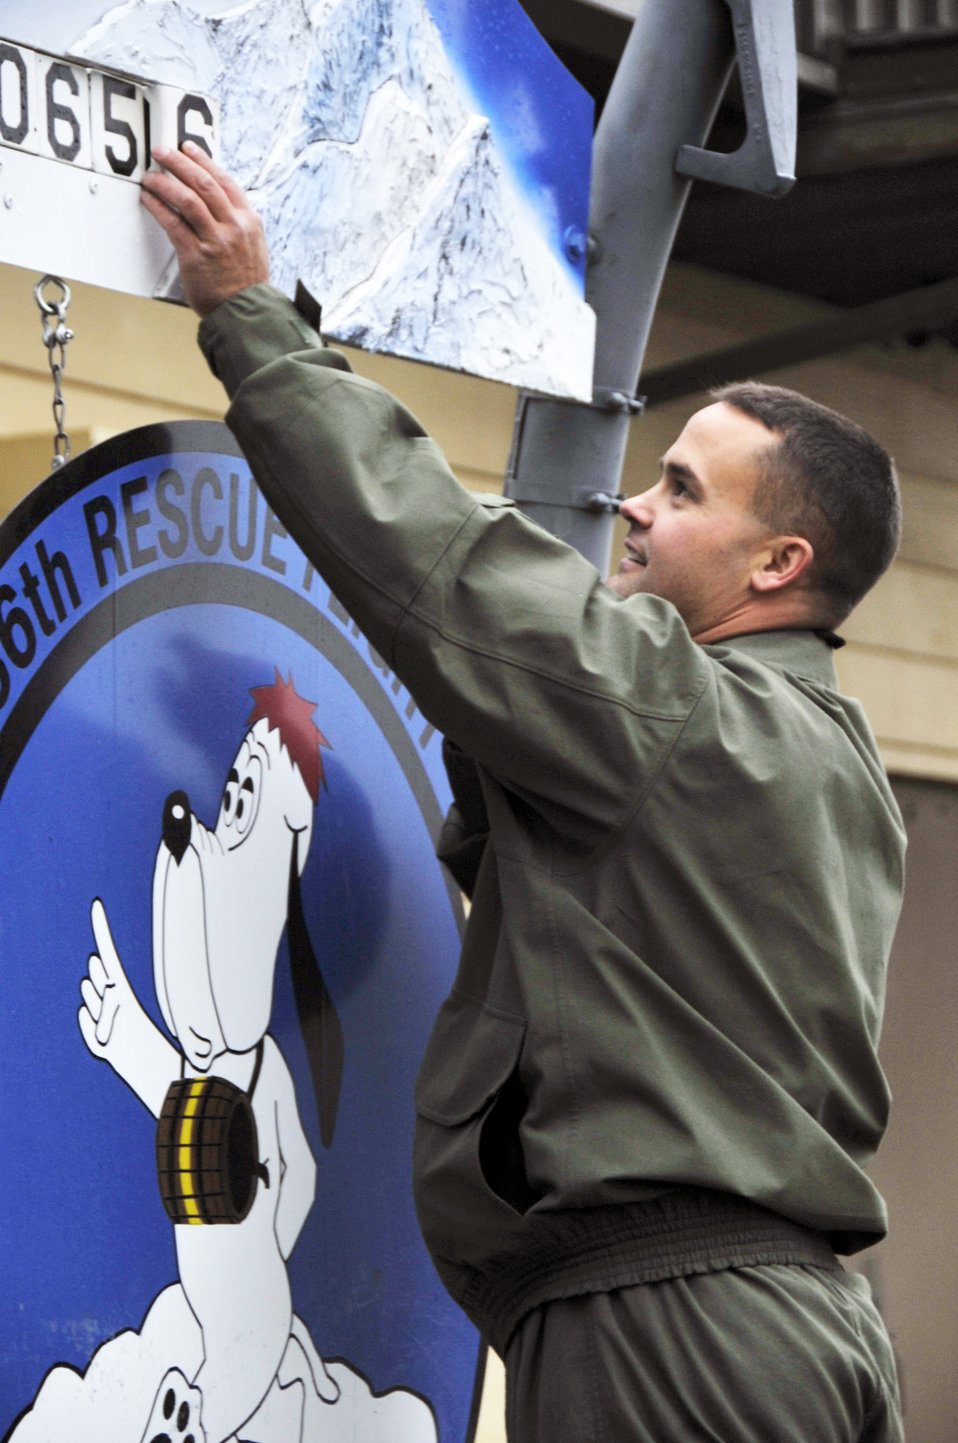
Fairchild rescue crew

Tech. Sgt. Joseph Brownell changes the number of people saved from 650 to 656 Oct. 29, 2010, at Fairchild Air Force Base, Wash. Sergeant Brownell was one of five crew members who rescued a father and daughter who'd been missing in Northern Idaho and then, on a separate mission during the same day, four campers and their dog. Sergeant Brownell is a medic with the 36th Rescue Flight.